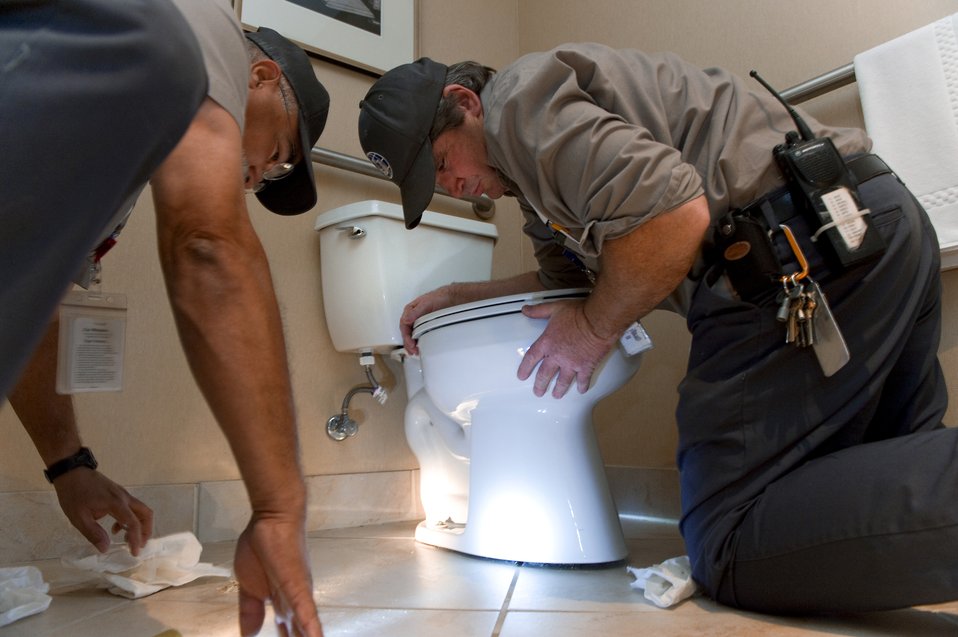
AF Spouse Raises Half a Million for Fisher House

Robert Galan (left) cleaned up some debris while Steve Varnon adjusted a replacement toilet in one of the two newer FIsher Houses in San Antonio on Nov 25. Varnon and Galan are maintenance mechanics with a local contractor. Wheel-in showers, restroom handrails, lowered sinks, elevators and many other features were designed with patient and family needs in mind. A portion of the donations totaling more that $500,000 went toward the construction and maintenance seen here.